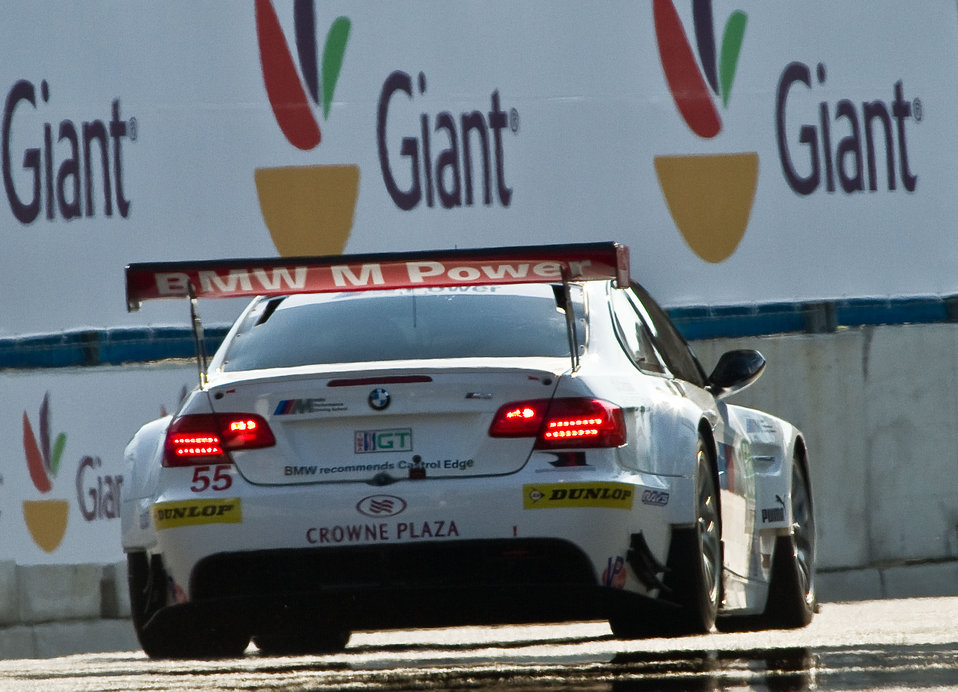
The Number 55, BMW M3 GT of BMW Team RLL uses E85 fuel for the American Le Mans Series (ALMS) motorsport series at the Baltimore Grand Prix, on the streets of downtown Baltimore, MD, on Friday, August 31, 2012, Labor Day Weekend. ALMS says they are “the Global Leader in Green Racing by being the only racing series recognized to comply with the Green Racing protocols developed by the U.S. Department of Energy (DOE), the U.S. Environmental Protection Agency (EPA) and Society of American Engineers International (SAE).” Instead of high-octane gasoline all the cars in the series use one of 5 different forms of energy (system). Clean diesel, E85, E10, isobutanol or hybrid energy technology. The specific hybrid system, used by the Porsche GT3 cars, are a (battery-less) flywheel-based Kinetic Energy Recovery Systems. These organizations are accelerating technology development at speeds up to 200 mph, in 650-700 horsepower race cars that are based on two groups of cars; the purpose built prototype race cars and the GT
(Grand Touring) cars based on production sports cars that you can see in showrooms. From these groups, there are five classes of cars, all of which race at the same time during the race events.
The U.S. Department of Agriculture (USDA) focuses on renewable fuel sources that are profitable and sustainable. 2011 accomplishments include research and planning for renewable energy and investments in renewable energy production.
- Completed a Biofuels Roadmap proposing a plan of action to meet congressionally mandated RFS2 goals for national biofuels production.
-Coordinated five regional research centers to work on the science necessary to ensure profitable biofuels can be produced from a diverse range of feed stocks across the nation, not just in the Midwest where the industry is already thriving.
-Over three years, USDA invested about $320 million to accelerate research on renewable energy ranging from genomic research on bioenergy feedstock crops, to development of biofuel conversion processes and costs/benefit estimates of renewable energy production.
- More than 130 biodiesel and ethanol projects funded by USDA are currently producing almost 3.7 billion gallons of biodiesel and ethanol annually, enough fuel – in equivalence to gasoline – to keep five million vehicles on the road every year.
-We are supporting efforts to build five biorefineries to produce advanced biofuels in states from Florida and Michigan to New Mexico, with investments worth about $310 million. We are supporting facility upgrades and feasibility studies for advanced biofuels projects in every region of the country.